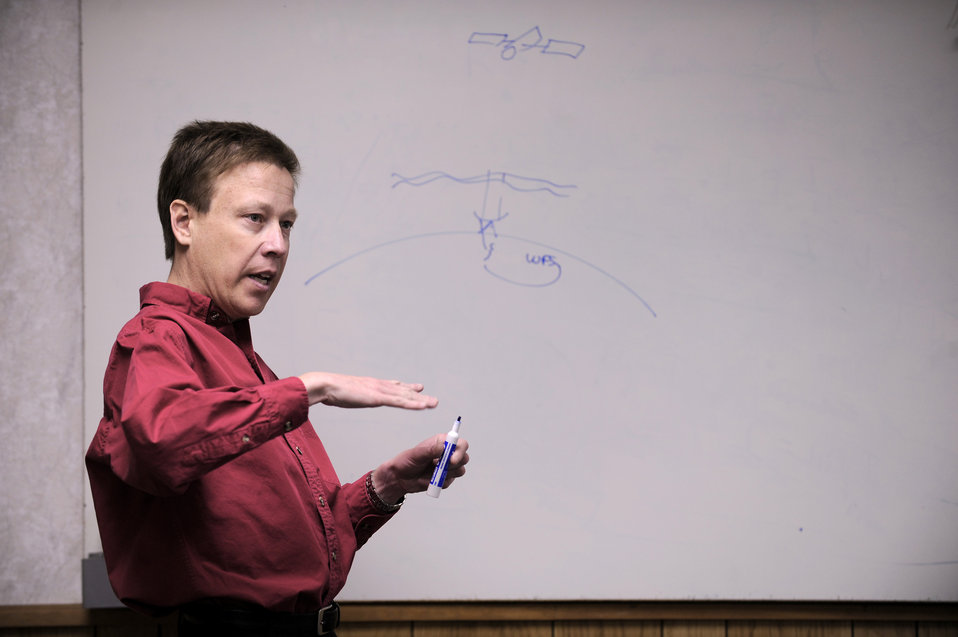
Academy researcher develops satellite imaging technology

Dr. Geoff Andersen draws a diagram and explains holographic adaptics optics research Jan. 22 at the U.S. Air Force Academy in Colorado. Dr. Andersen is a research associate, teaches cadets and conducts experiments at the Laser and Optics Research Center.